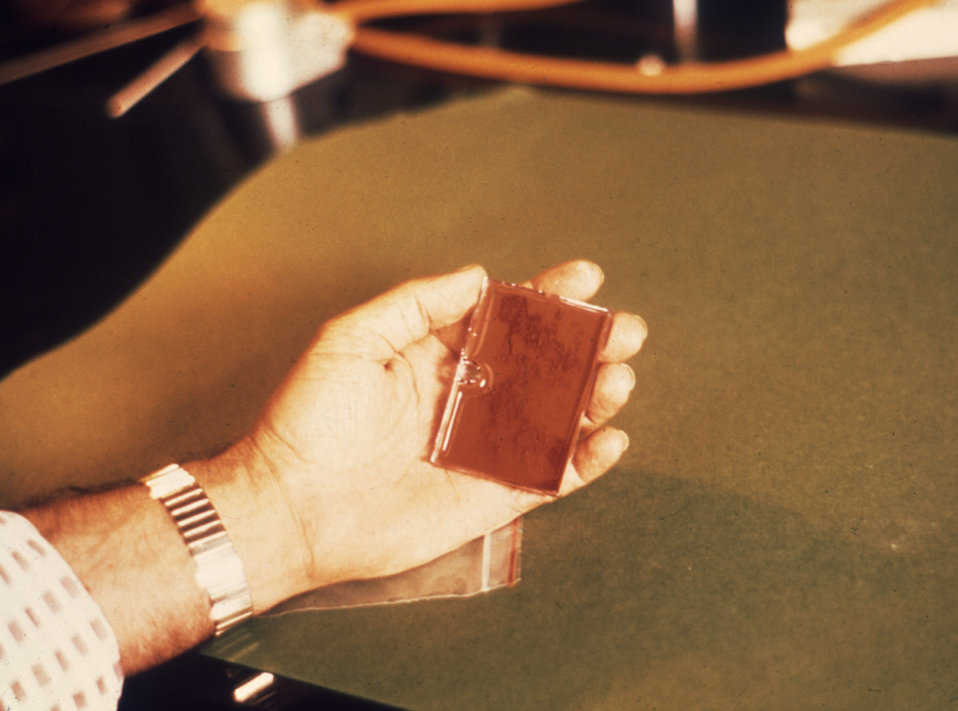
This photograph depicts a gonorrhea culture plate that has been inoculated using a cross-streaking method.